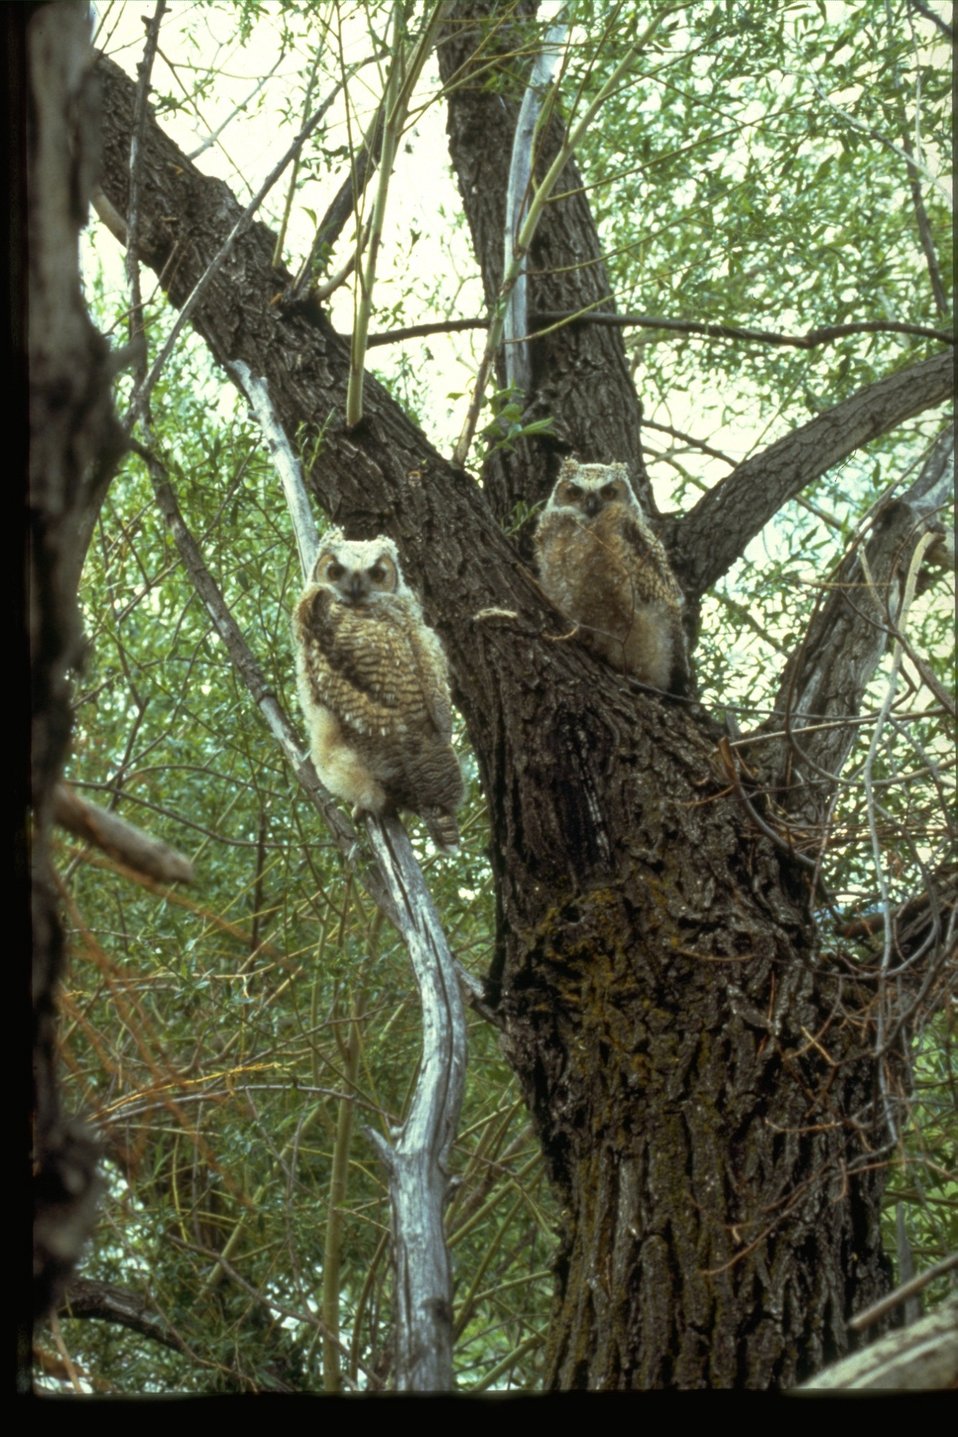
Great horned owls perched in a tree. (Bubo virginianus)